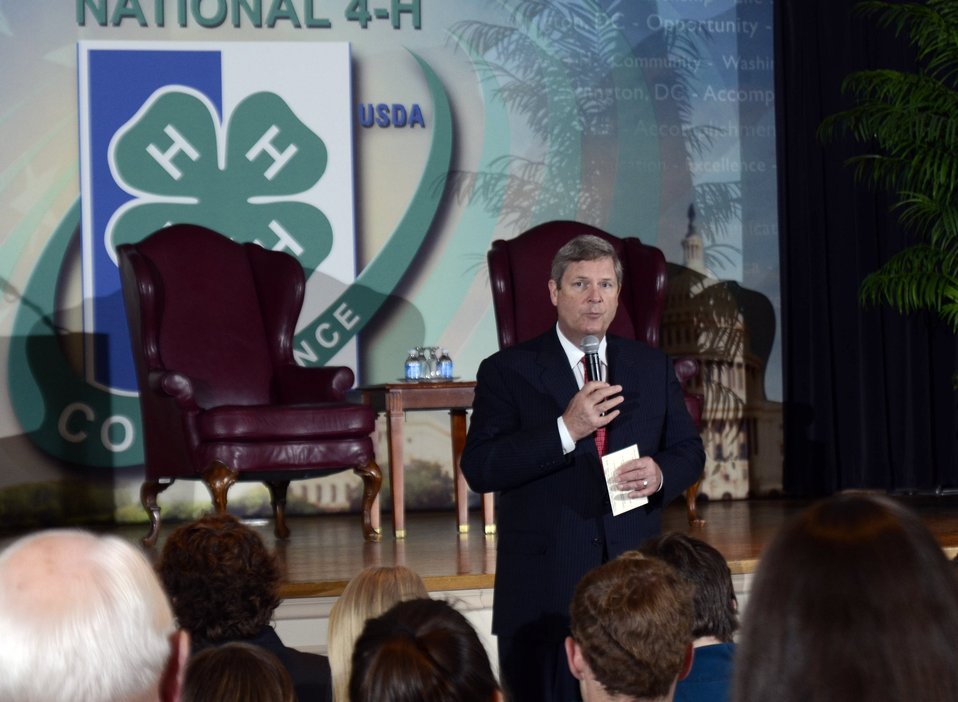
Agriculture Secretary Tom Vilsack speaks with 4-H members at the National 4-H Youth Center in Chevy Chase, MD, on Monday, March 26, 2012. 'For almost 100 years, USDA and 4-H have partnered to produce some of our nation's best and brightest, including farmers and ranchers who have supported the American economy and put food on our tables,' Vilsack said. 'You all are tomorrow's leaders. We need you to think big, innovate and help tackle the important challenges standing between us, a stronger middle class and a stronger nation.'